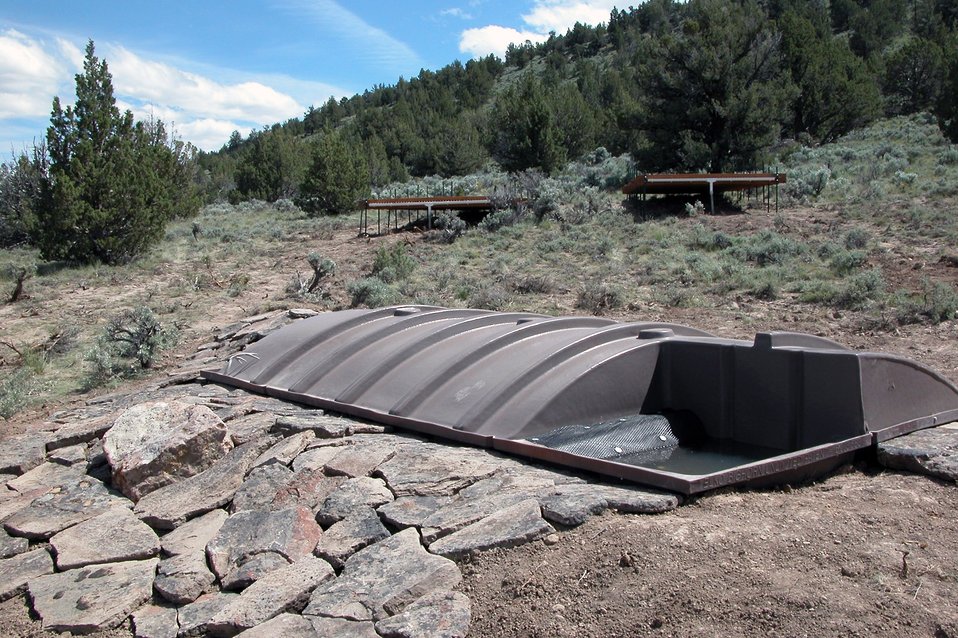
Volunteers help BLM build guzzlers to provide water for wildlife.